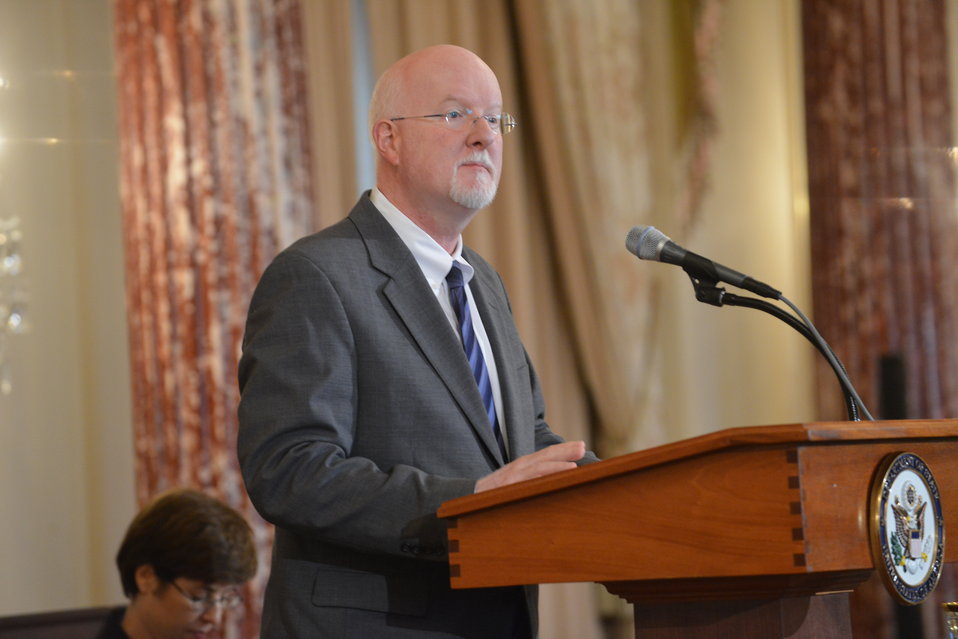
Special Advisor Casey Delivers Remarks at the Launch of the Office of Faith-Based Community Initiatives

Dr. Shaun Casey, a Special Advisor selected by U.S. Secretary of State John Kerry to lead the U.S. Department of State's new Office of Faith-Based Community Initiatives, delivers remarks at the Department in Washington, D.C., on August 7, 2013.